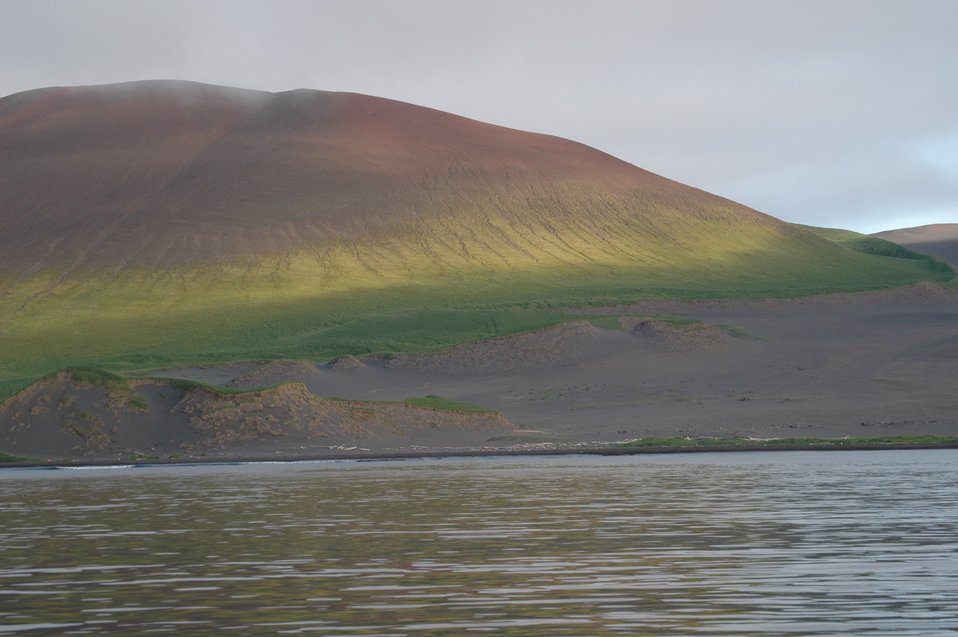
A dome-shaped hill east of Mount Cleveland at Applegate Cove. The natural color banding is reminiscent of artifical color 3-D terrain models.